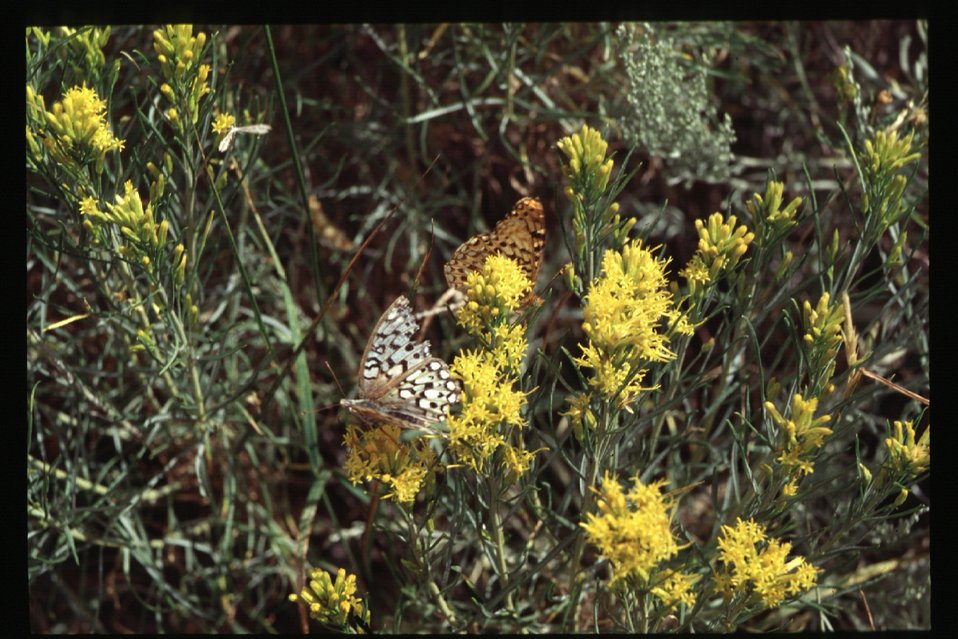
Butterfly Butterflies Rangeland Salmon Field Office UCSC Upper Columbia Salmon Clearwater District